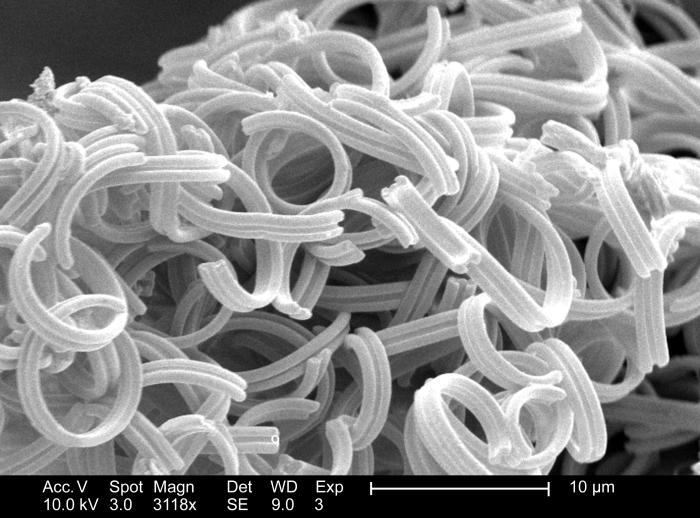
This scanning electron micrograph (SEM), highly magnified at 1559x, some interesting morphologic shapes manifested by the microscopic debris that was attached to the exoskeletal surface of an unidentified insect.